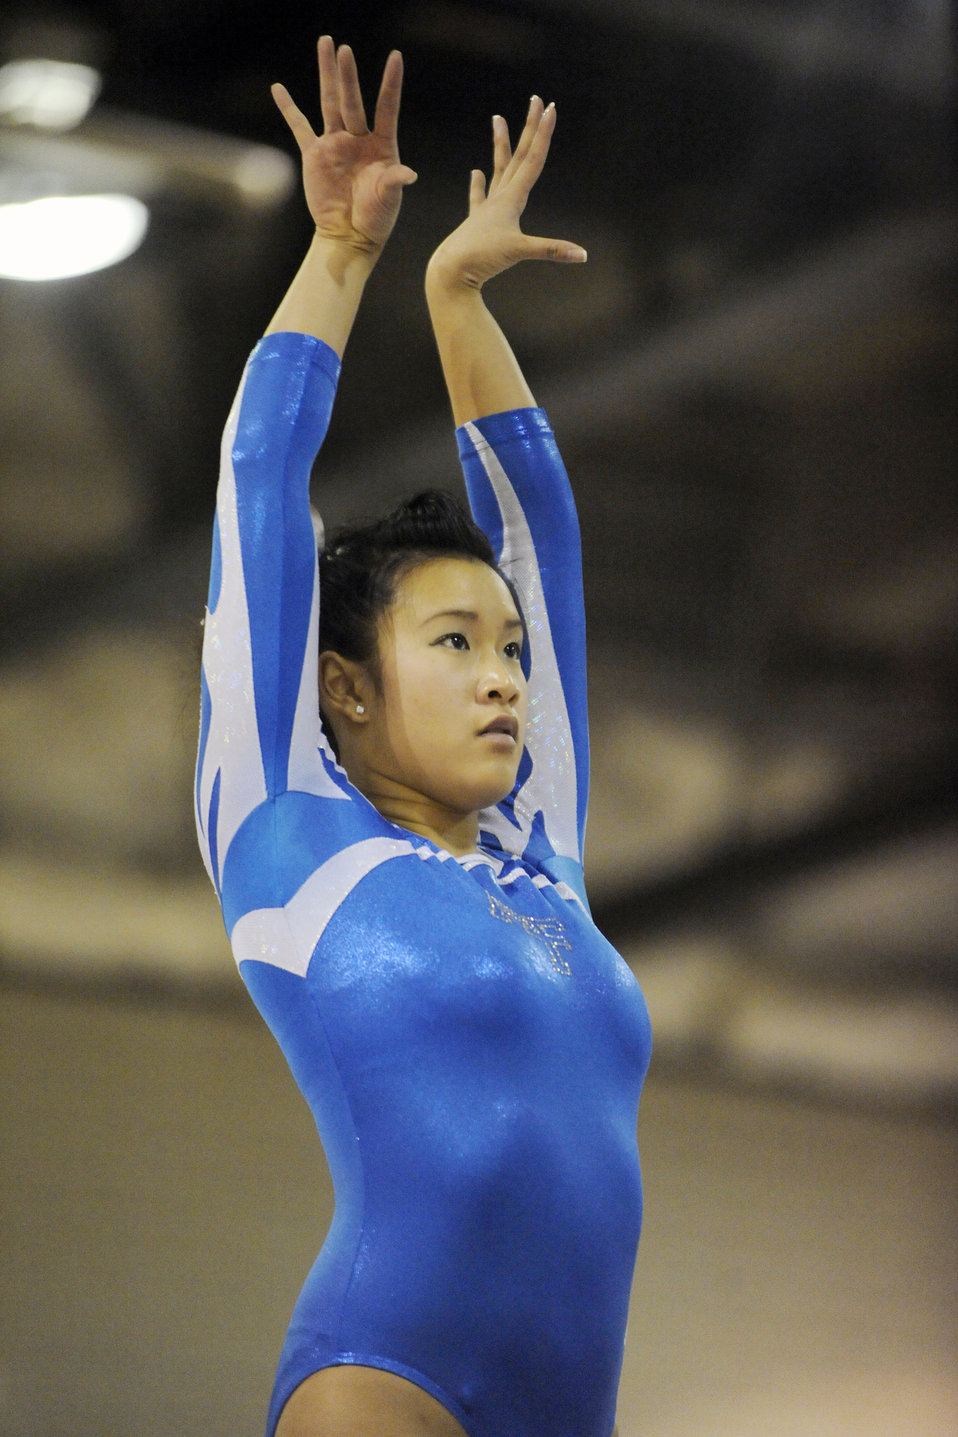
Falcon gymnasts compete against UC Davis

U.S. Air Force Academy junior Lisa Wong poses on the balance beam during her routine in the meet against University of California Davis Jan. 30, 2010, in the Cadet Gymnasium in Colorado. Air Force lost the meet 191.575 to 185.300 despite two event titles.